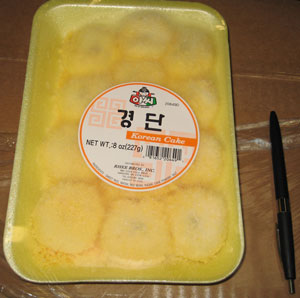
RECALLED - Korean Rice Cake

December 8, 2011 - Product Recall - Rhee Bros., Inc. Issues Allergy Alert on Undeclared Egg in “ASSI” Brand Korean Cake (Gyeong Dan).